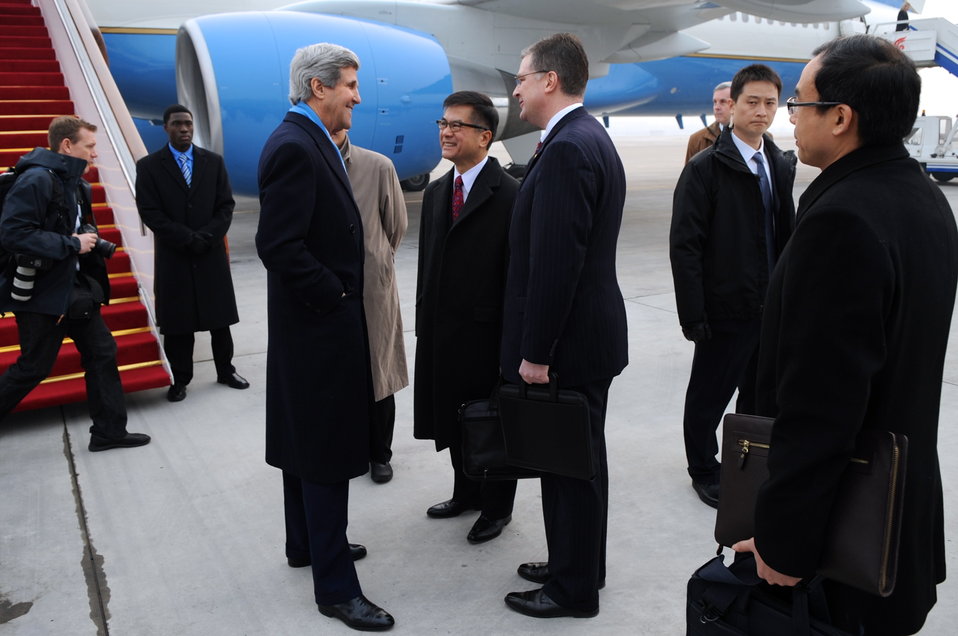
Secretary Kerry Arrives in Beijing, China

U.S. Secretary of State John Kerry chats with U.S. Ambassador to China Gary Locke and Deputy Chief of Mission Dan Kritenbrink upon arriving in Beijing, China for a series of high-level government meetings on February 14, 2014.